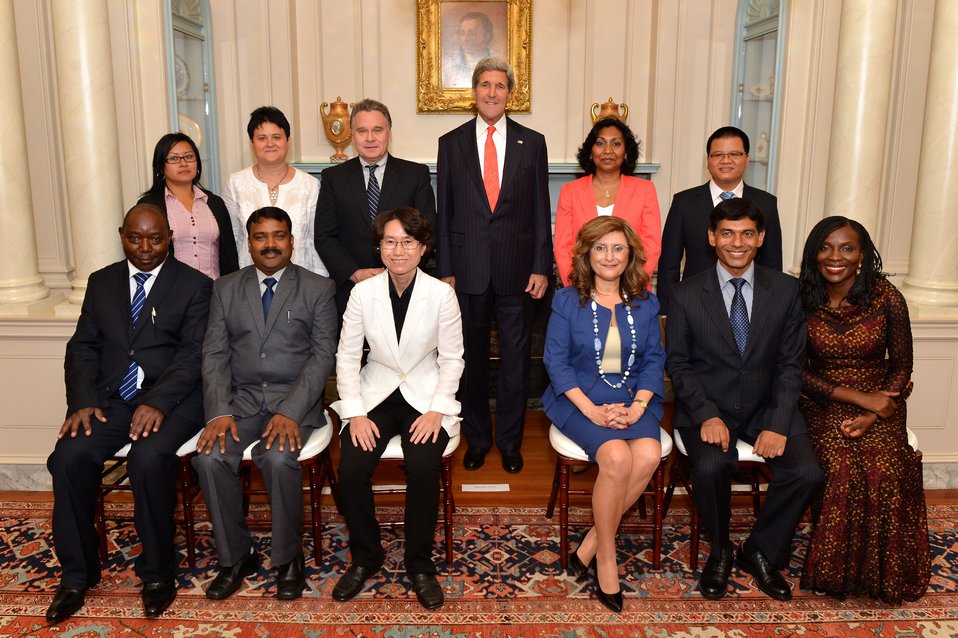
Secretary Kerry Poses for a Photo With the 2014 TIP Report Heroes

U.S. Secretary of State John Kerry poses for a photo with the 2014 TIP Report Heroes, 10 men and women whose tireless efforts have made a lasting impact on the global fight against modern slavery, at the U.S. Department of State in Washington, D.C., on June 20, 2014. The 2014 TIP Heroes are Gilbert Munda of the Democratic Republic of Congo, Elisabeth Sioufi of Lebanon, Beatrice Jedy-Agba of Nigeria, Monica Boseff of Romania, Ta Ngoc Van of Vietnam, Bhanuja Sharan Lal of India, Tek Narayan Kunwar of Nepal, Jhinna Pinchi of Peru, Charmaine Gandhi-Andrews of Trinidad and Tobago, and Myeong-jin Ko of South Korea.